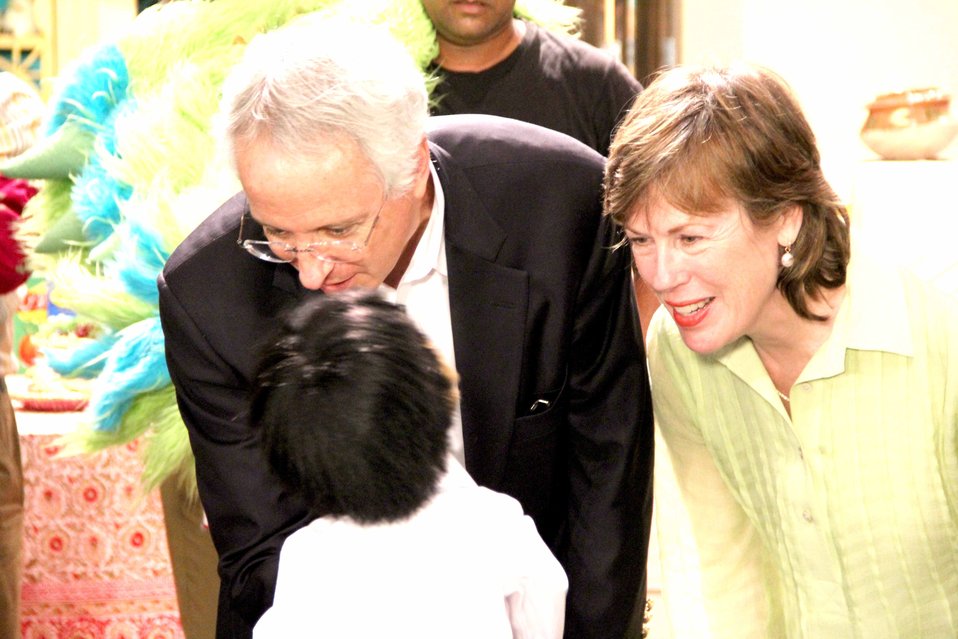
U.S. Ambassador’s Visit to Sim Sim Hamara Highlights U.S. Commitment to Improved Children’s Education in Pakistan at Lahore on 28 April, 2012

Cameron Munter & his wife Marliy Wyatt talk with child